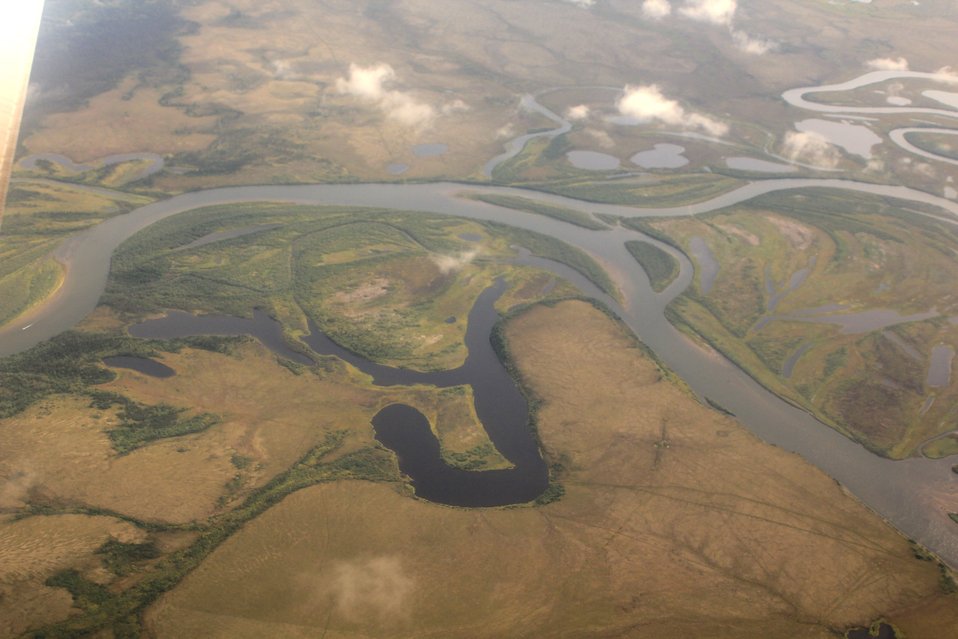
Flying over the Unalakleet River Delta showing oxbow lakes and bends on the low gradient area next to Norton Sound.